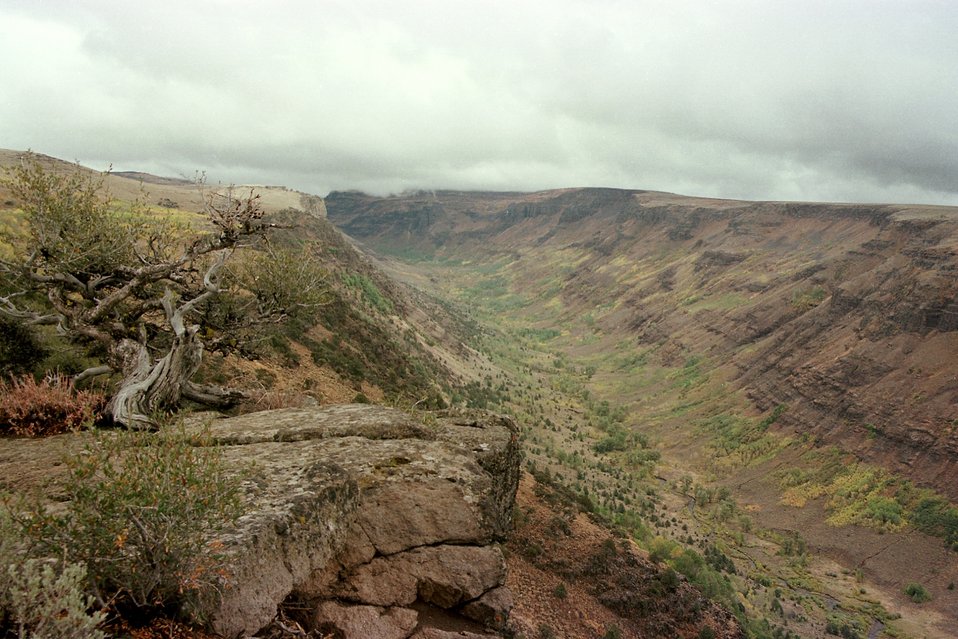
Fish Lake at Steen's Mountain.